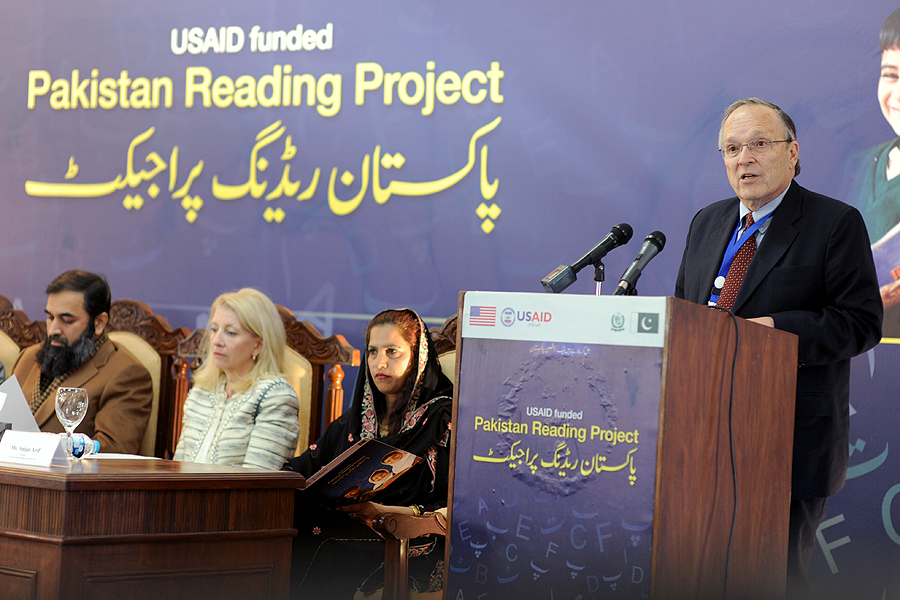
United States and Pakistan Launch the Pakistan Reading Project